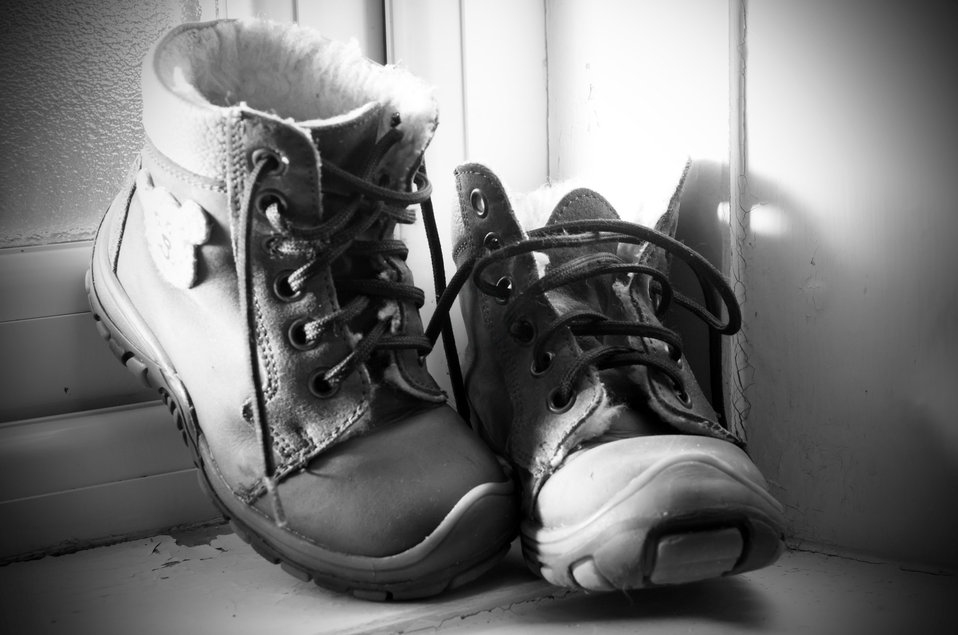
Children's shoes.